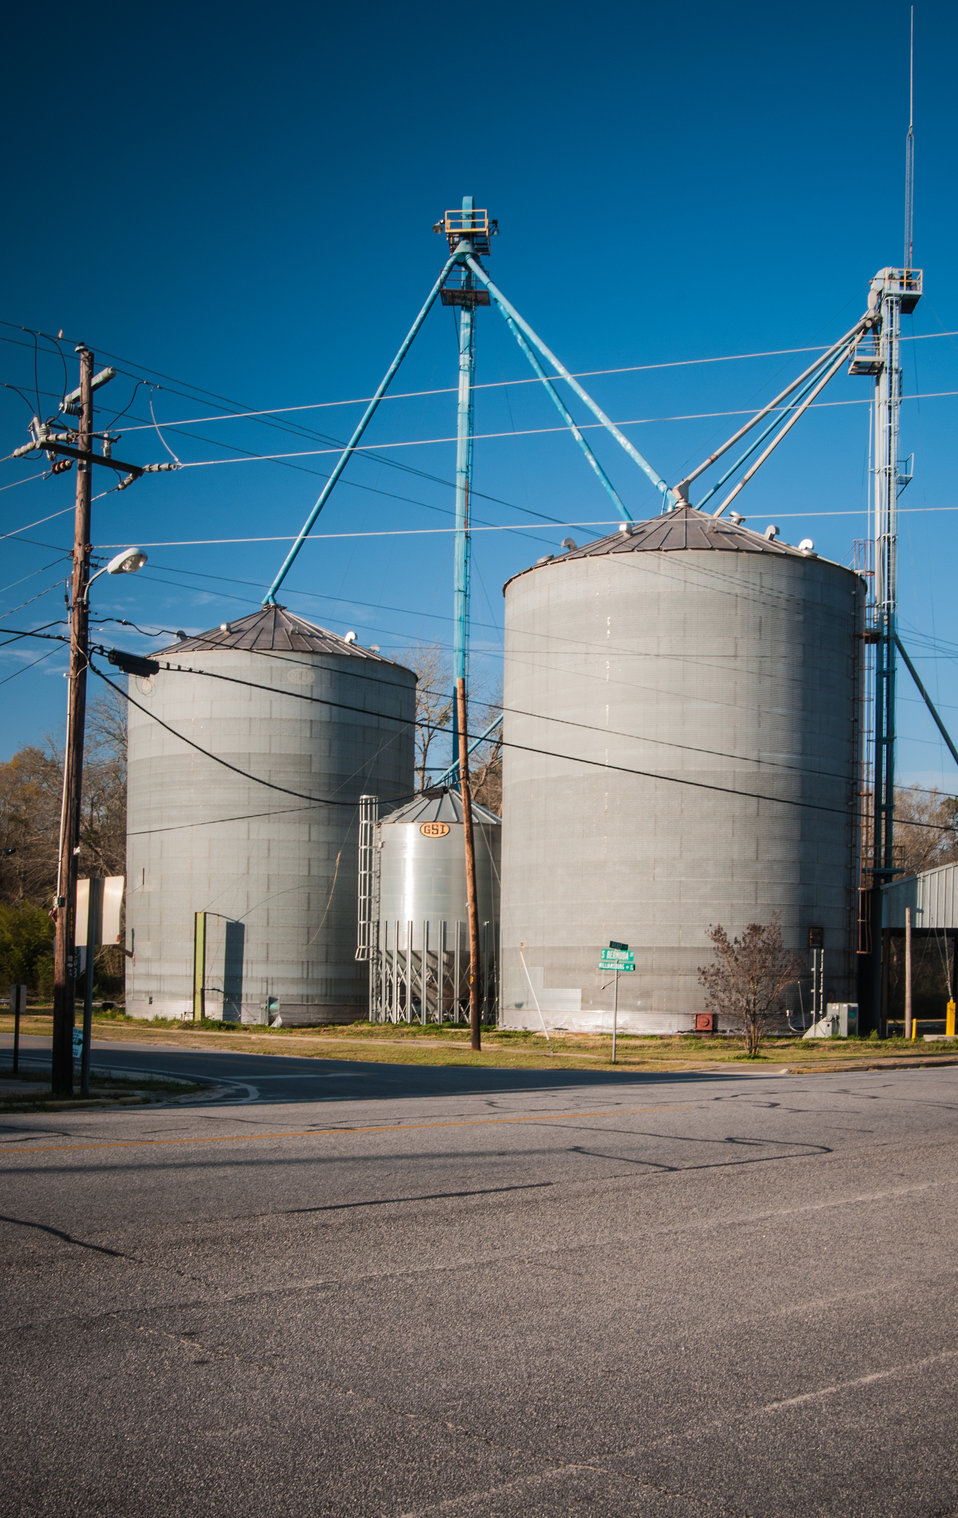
Storage facilities near downtown Morgan, GA on Mar. 7, 2013. The U.S. Department of Agriculture (USDA) offers many economic grants, loans and conservation contracts through Rural Development (RD) and the Natural Resources of Conservation Service (NRCS) for areas of rural America with a high percentage of people living below the poverty level and considered economically distressed.